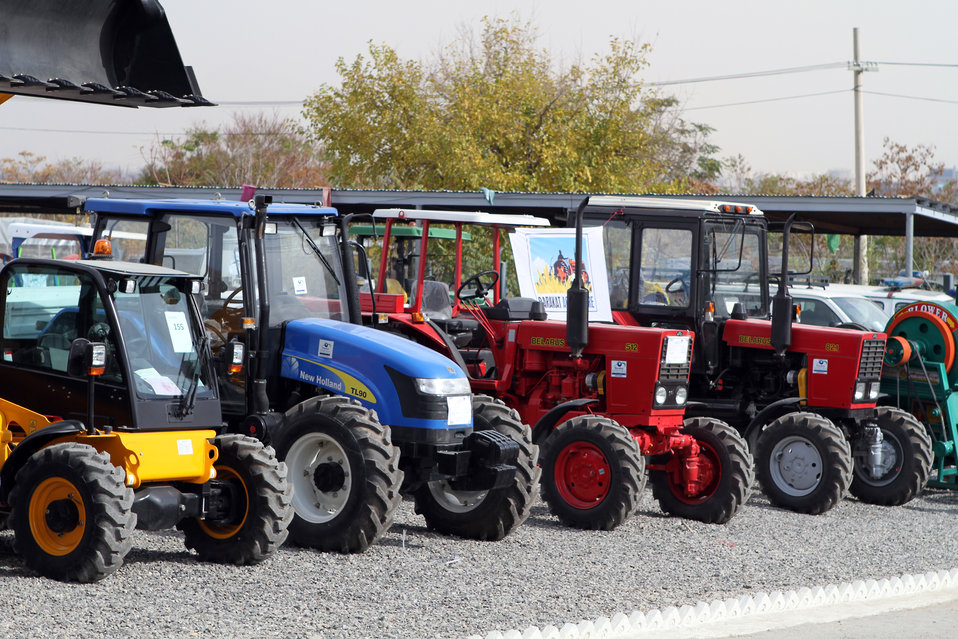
Agfair event